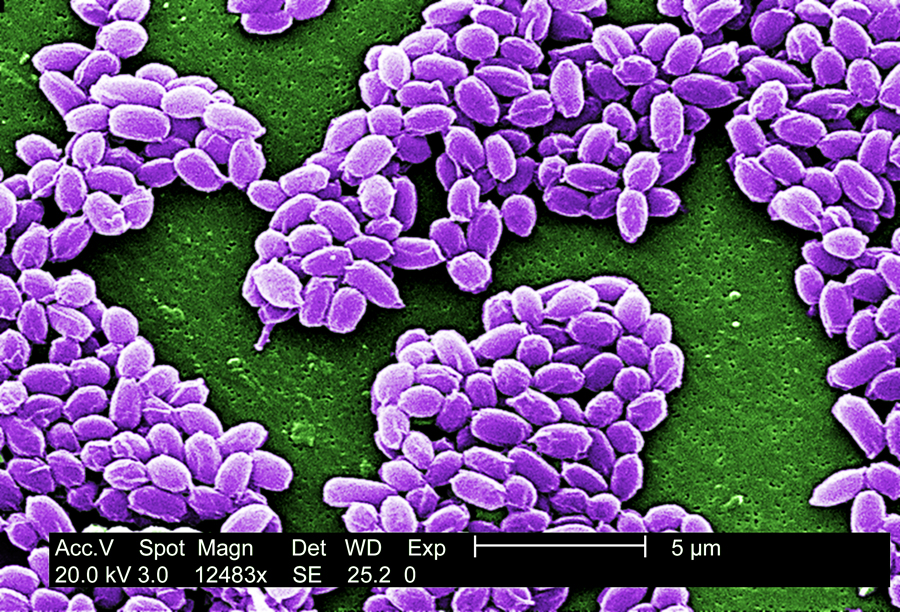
Anthrax spores

This scanning electron micrograph shows spores from the anthrax vaccine strain of Bacillus anthracis. These spores can live for many years, enabling the bacteria to survive in a dormant state. The spores range in size from 0.5 to 2 micrometers (millionth of a meter).